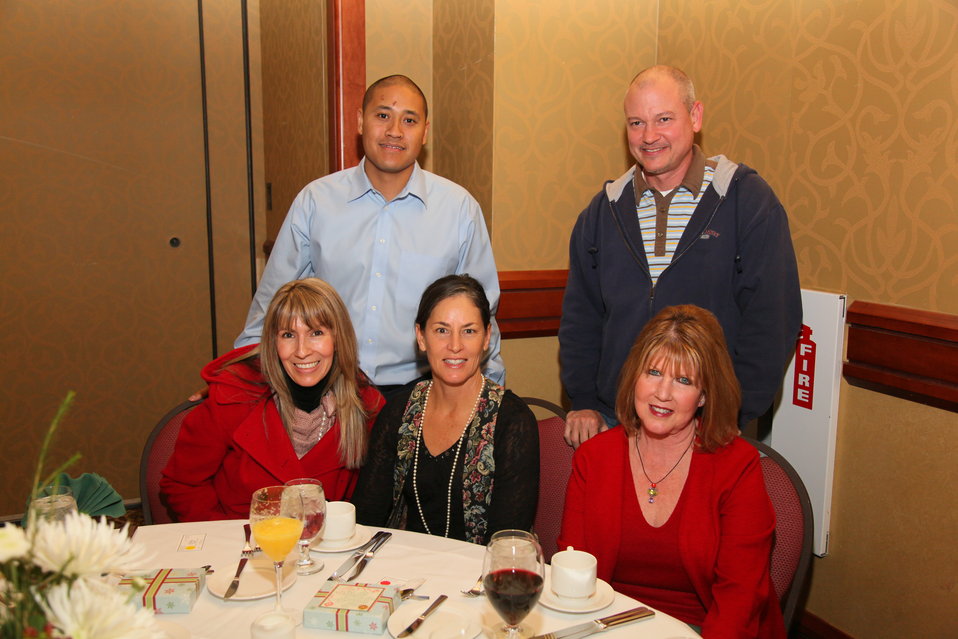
Sacramento District Holiday Party 2011